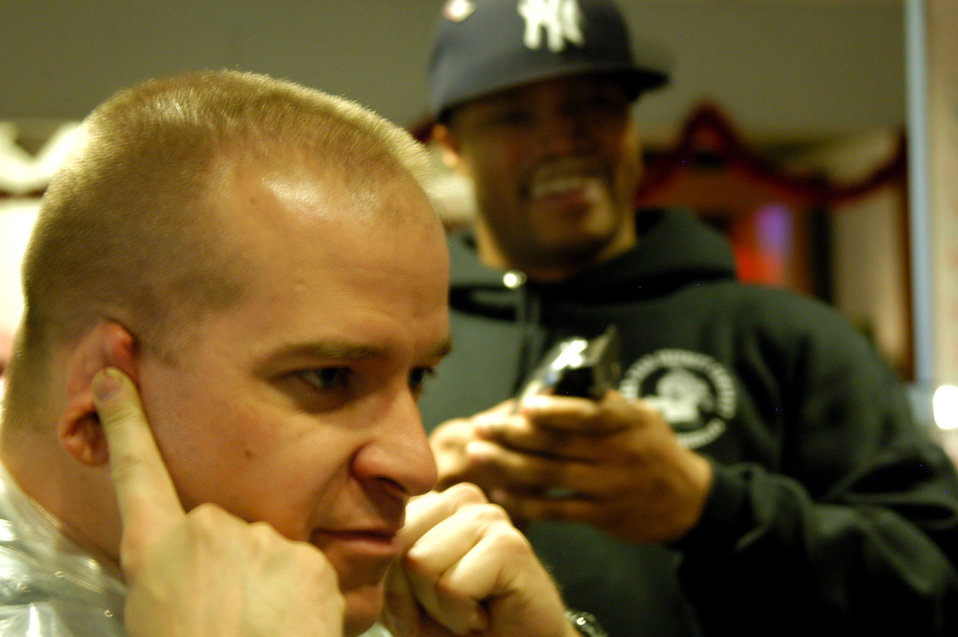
Season of giving extends throughout the year at top of the world

Master Sgt. Chester Spires, 821st Air Base Group first sergeant, prepares to have his head shaved by Staff Sgt. Jerry Chandler, 821st Security Forces Squadron, as part of a fundraising event at the Julemand Festival here Nov. 17. The festival is an annual event that is part of Operation Julemand -- the Danish word for Santa Claus -- the base's largest charity drive. The operation raises money to buy Christmas gifts for children in the surrounding villages. From head shaving to a 'Thule Idol' contest, the festival raised more than $7,000.